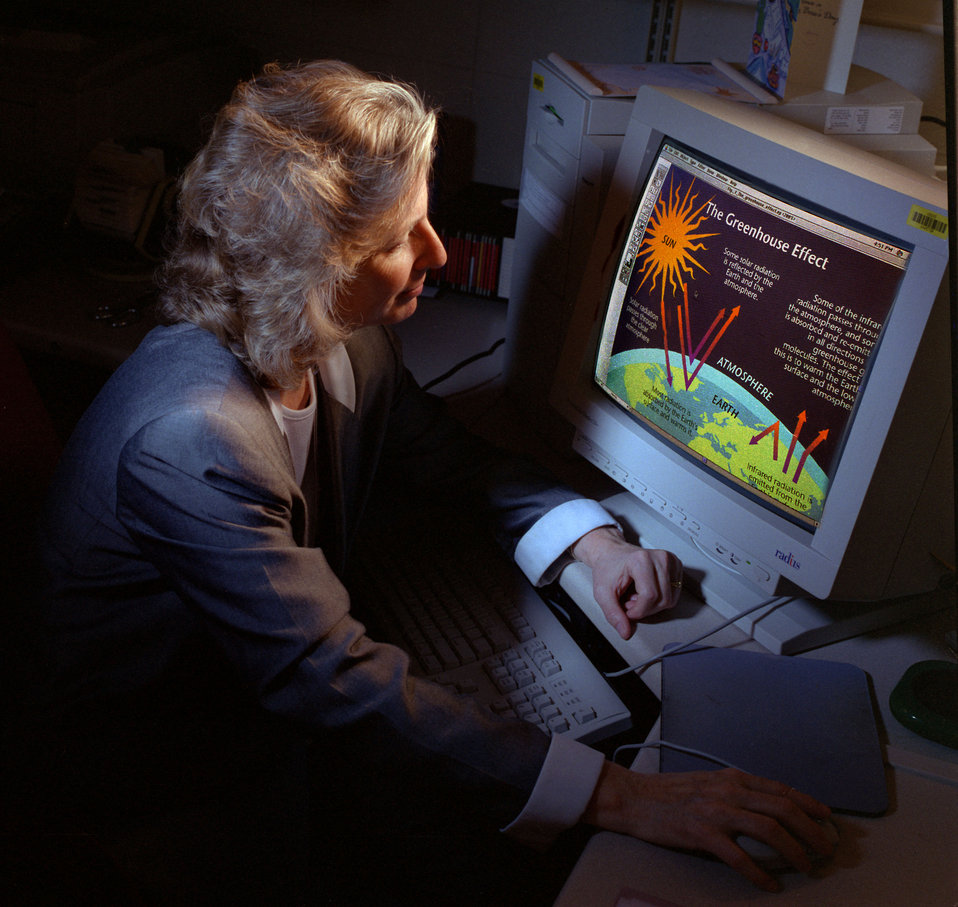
Global warming climate on computer screen Oak Ridge National Lab.

97-526 DOE photo by Lynn Freeny

Global warming climate on computer screen Oak Ridge National Lab. Oak Ridge Tennessee 11-4-1997